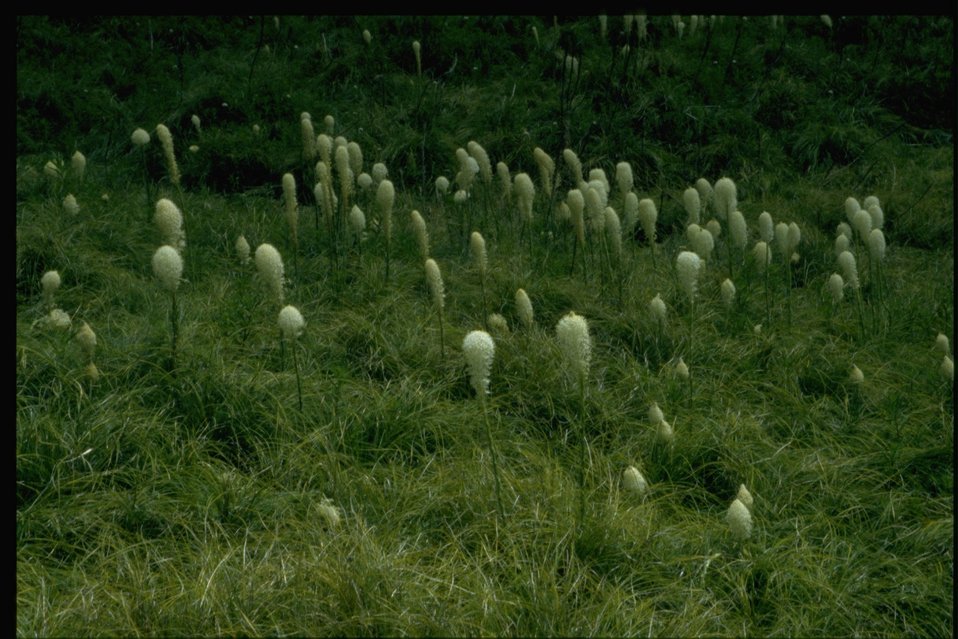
Medium shot, field of Xenophyllum tenax.